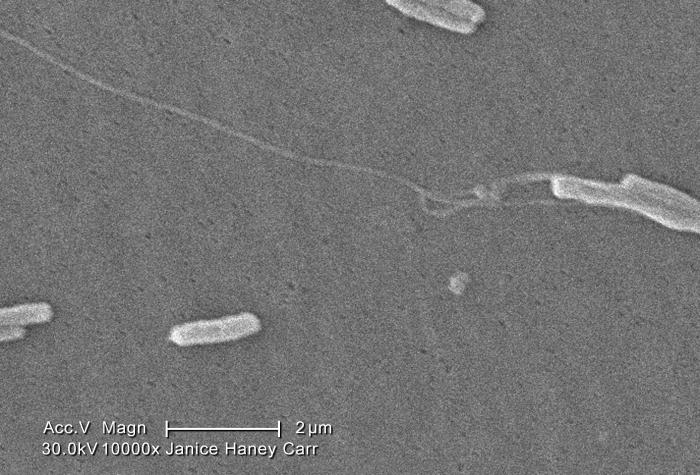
Under a very very high magnification of 10000X, this scanning electron micrograph (SEM) depicted a number of Gram-negative Legionella pneumophila bacteria. Please see PHIL 11092 through 11152 for additional SEMs of these organisms, specifically PHIL 11146 for a colorized version of this image. Of particular importance, is the presence of polar flagella, and pili, or long streamers, which due to their fragile nature, in some of these views seem to be dissociated from any of the bacteria. For a better view of these bacterial appendages, see the colorized version.